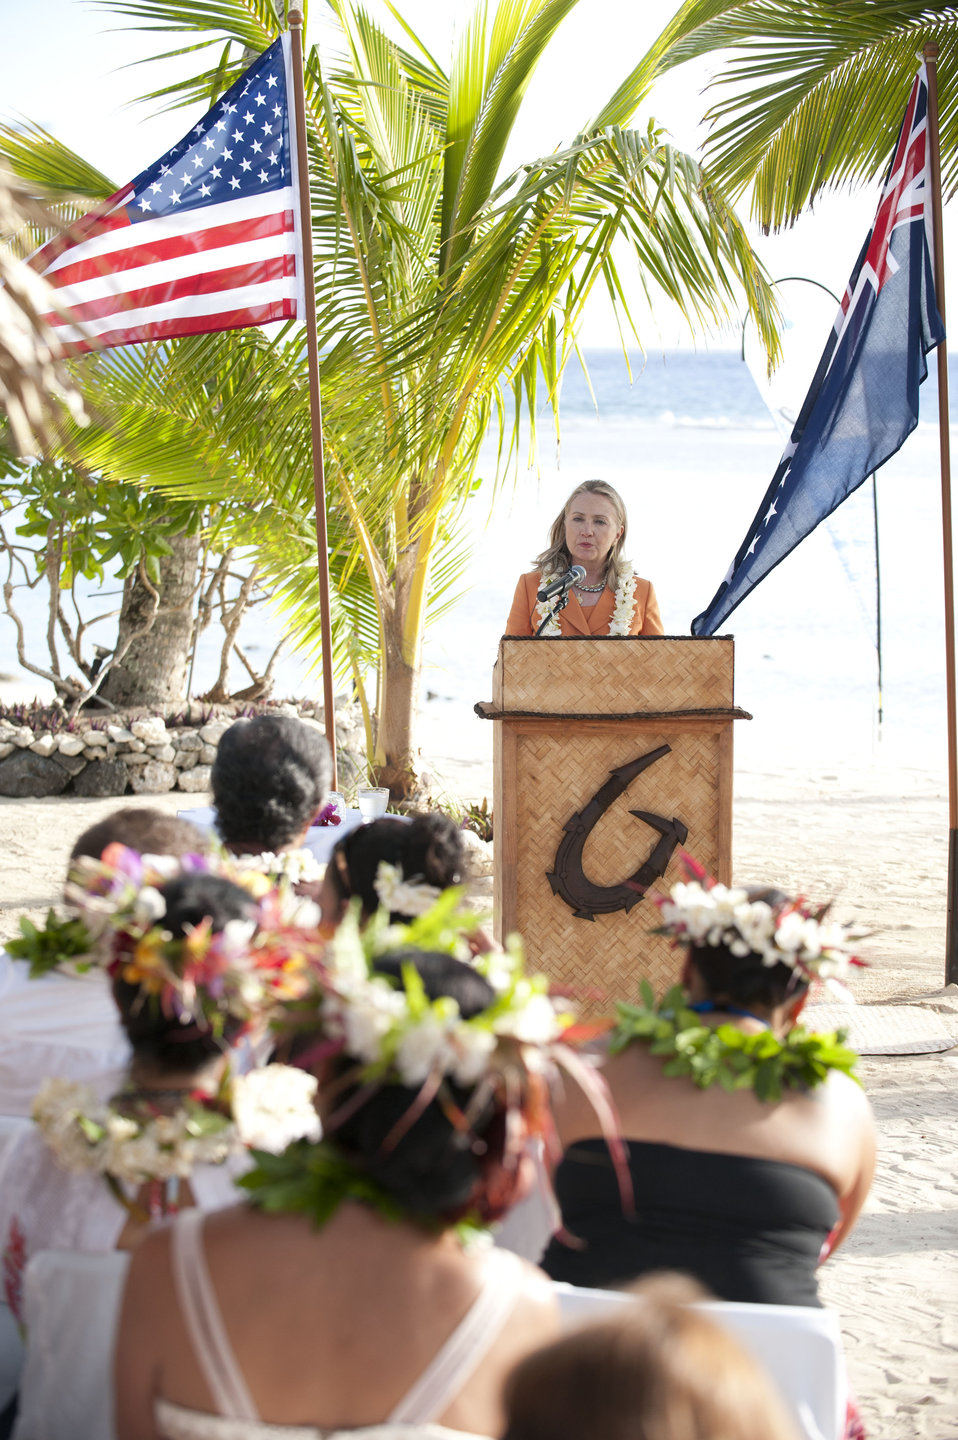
Sustainable Development and Conservation Event in the Cook Islands

U.S. Secretary of State Hillary Rodham Clinton delivers remarks at Sustainable Development and Conservation event in Rarotonga, Cook Islands, August 31, 2012.